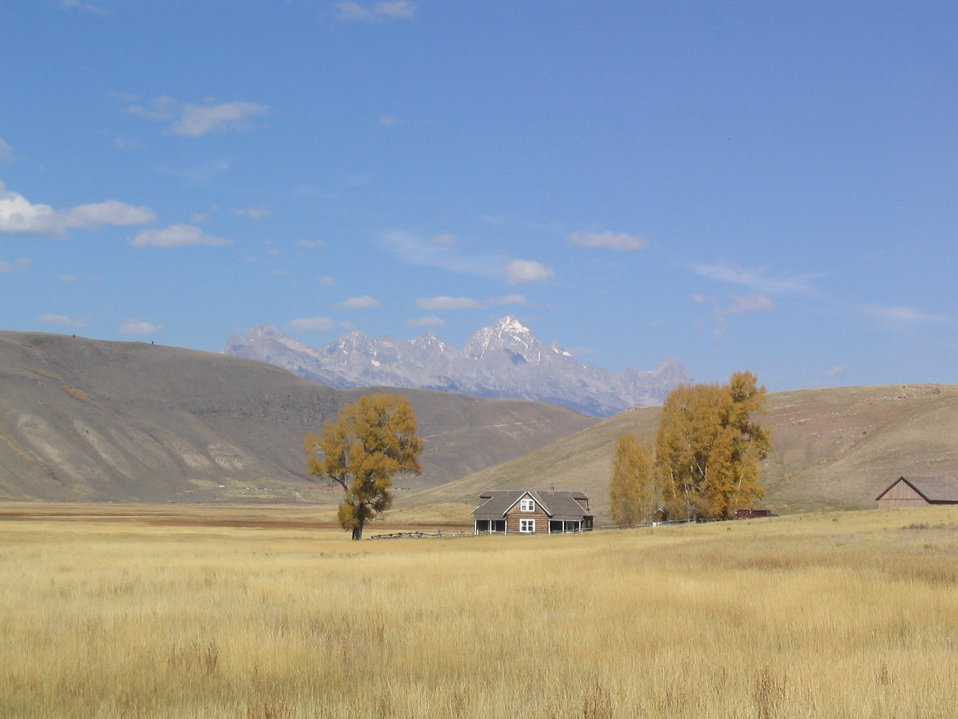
Historic Miller Ranch

The Miller House, located approximately 3/4 mile north of the National Elk Refuge entrance on East Broadway Street in Jackson, Wyoming is open from 10:00 a.m. to 4:00 p.m. during the summer season. Volunteer staff are on duty to talk about the history of the National Elk Refuge and early homesteaders who lived on the land. Entrance to the historic home is free of charge.